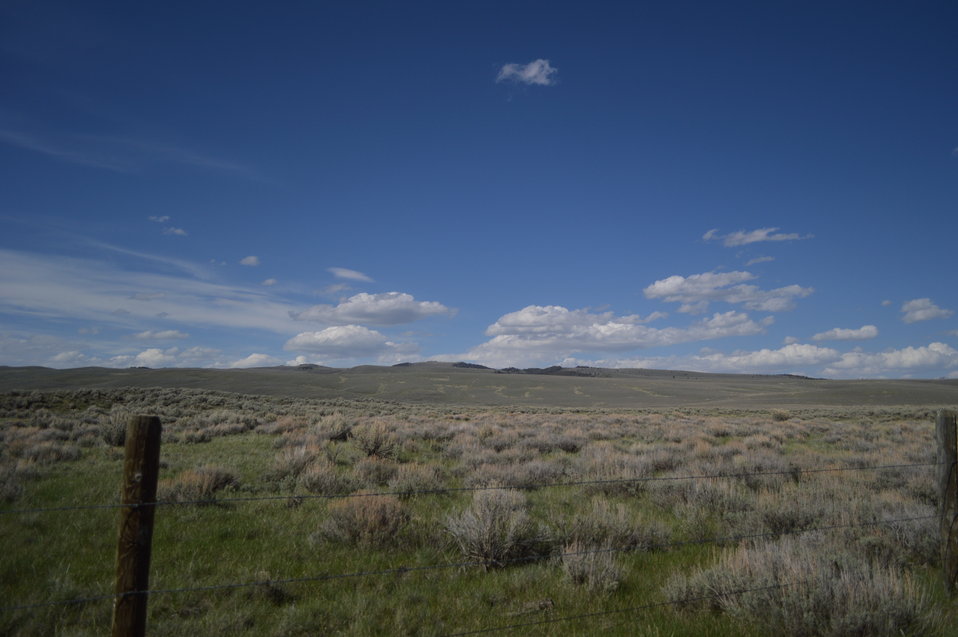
Regional Leadership Visit to Montana 2014